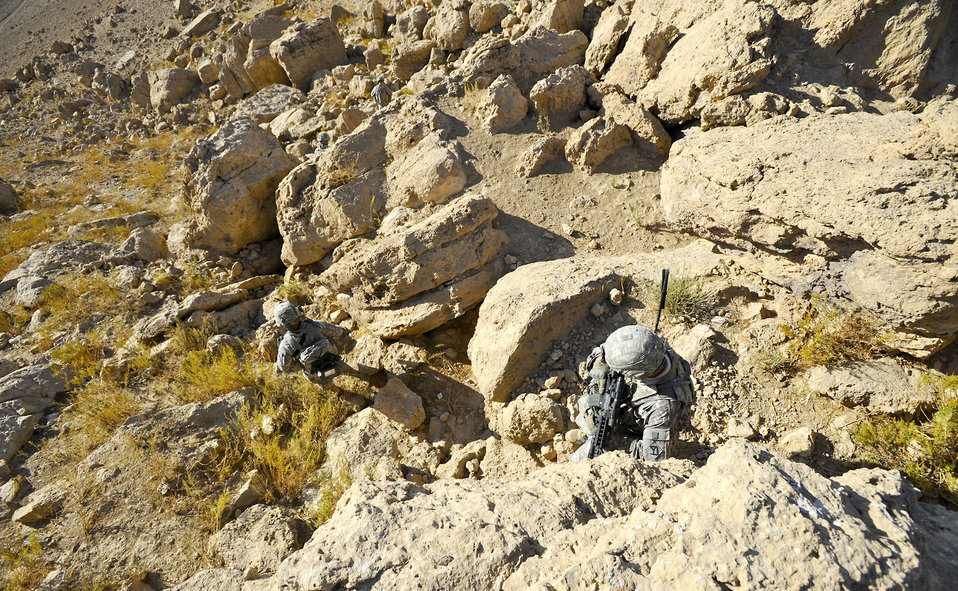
Provincial Reconstruction Team Zabul

Soldiers and Airmen make their way down a mesa Nov. 1, 2010, near the city of Qalat, Afghanistan, in the Zabul Province. The Provincial Reconstruction Team Zabul is composed of Air Force, Army, Department of State, U.S. Agency for International Development and Department of Agriculture personnel who work with the government of Afghanistan to improve governance, stability, and development throughout the province.